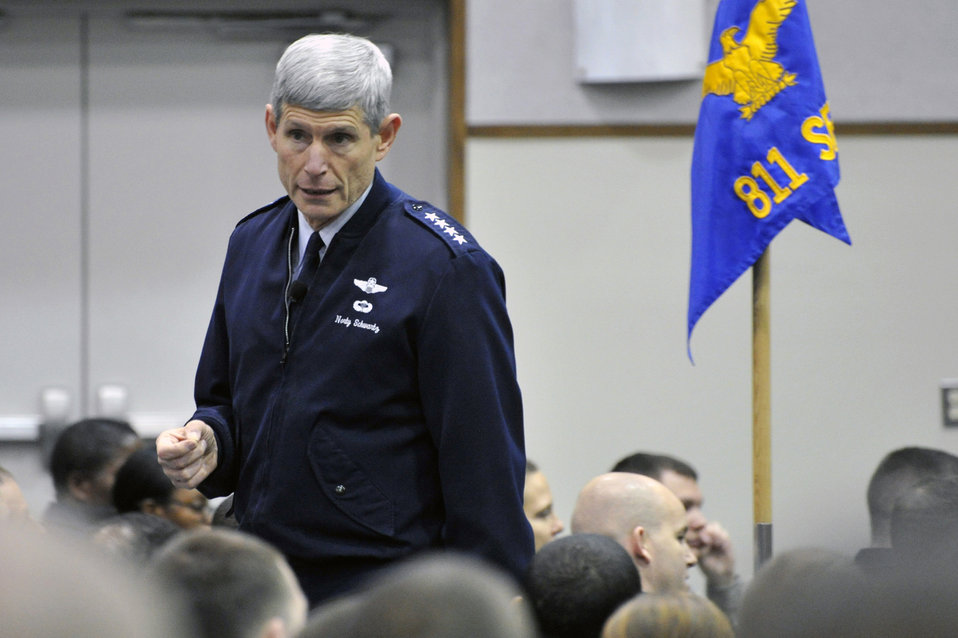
CSAF addresses key Air Force issues at JB Andrews

Air Force Chief of Staff Gen. Norton Schwartz speaks to Airmen Nov. 1, 2011, at Joint Base Andrews, Md. During the chief of staff call, Schwartz spoke about leadership, current Air Force issues and answered questions from the audience.